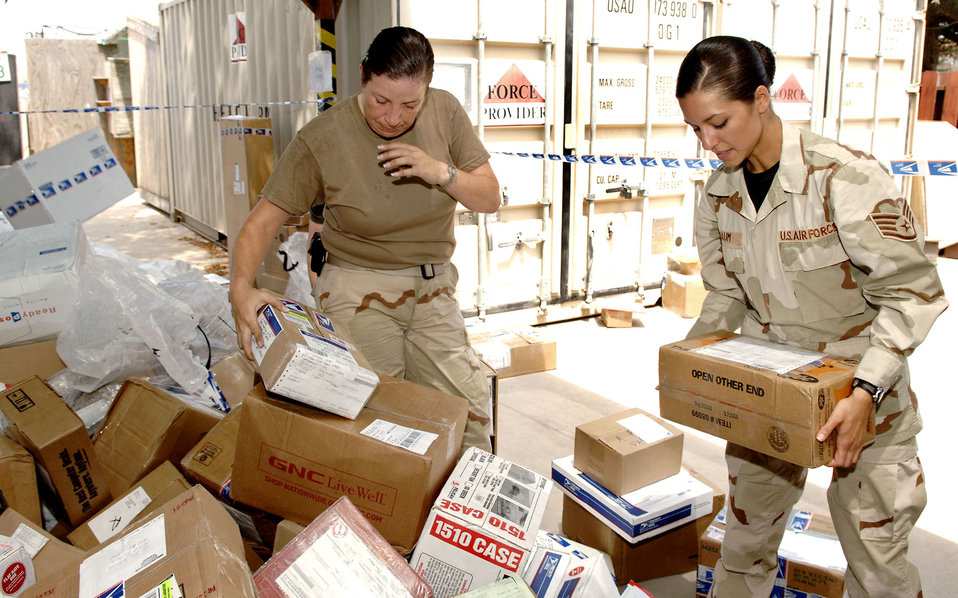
JTF Horn of Africa

Air Force Staff Sgt. Beatriz Baum works alongside Navy Petty Officer 3rd Class Misty Parker during a scramble to unload more than 5,000 lbs. of mail slated for delivery to service members deployed to Joint Task Force Horn of Africa at the postal center at Camp Lemonier in Djibouti.